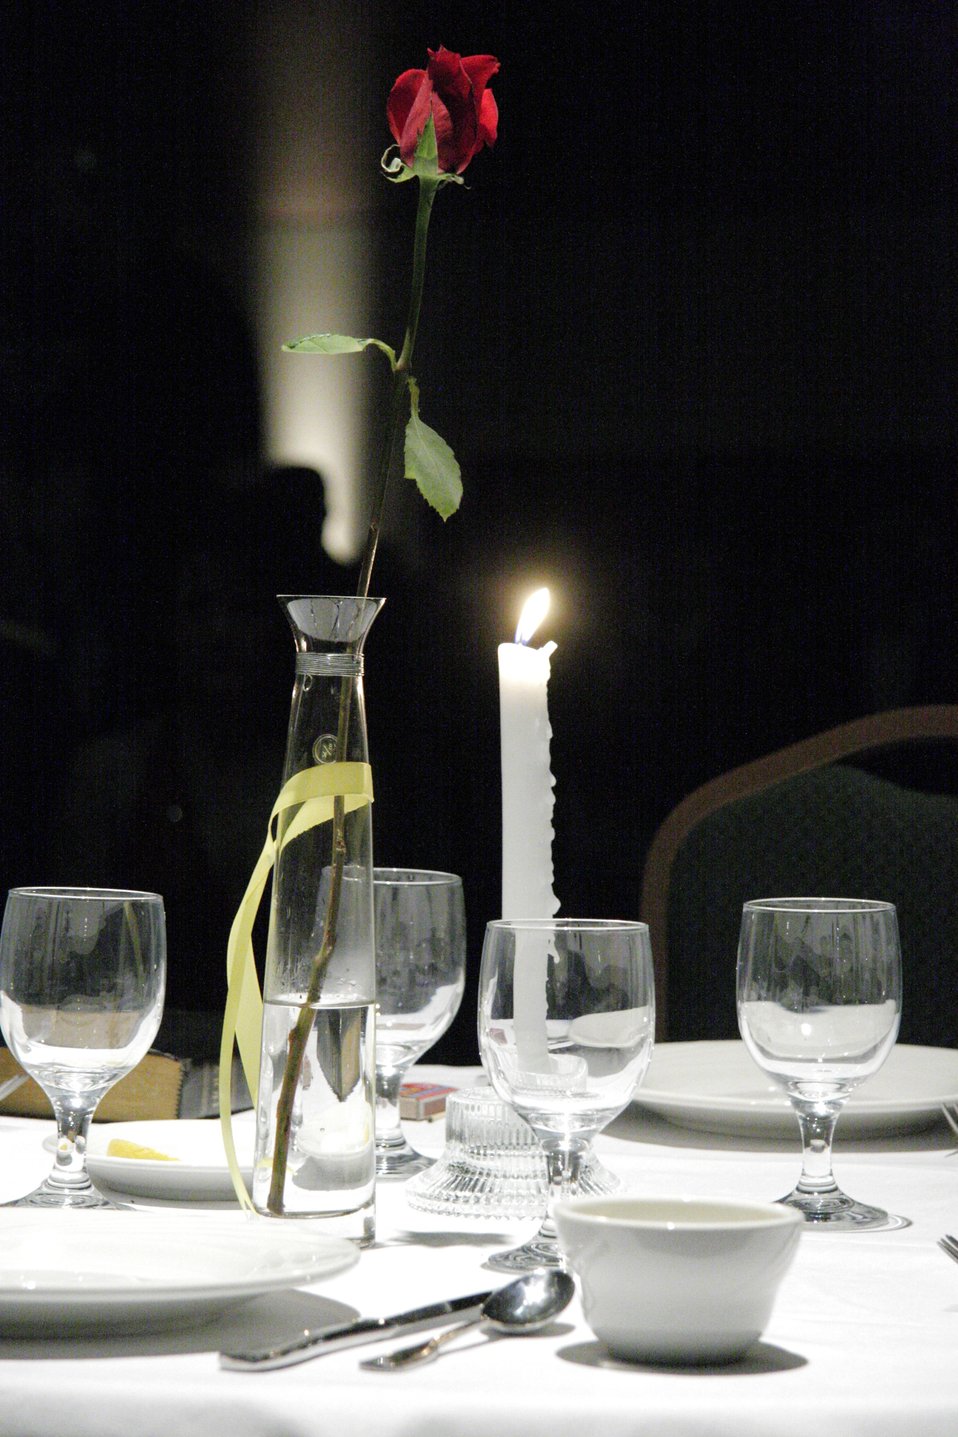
Oklahoma Military Ball

The POW/MIA table sits front and center at the National Guard Associaton of Oklahoma's Military Ball in Oklahoma City on Saturday, April 22, 2006. This table is set for our prisoners of war and those missing in action, from all wars. The table remains empty in hopes of their return. More than 500 people attended the annual event.